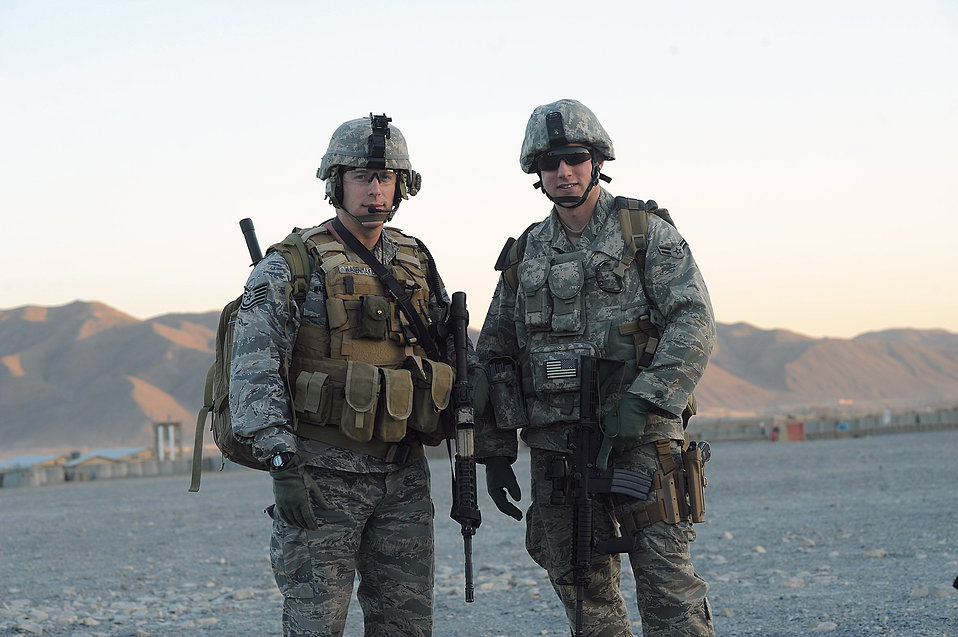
TACPs provide vital link between pilots, ground troops

As tactical air control party Airmen, Tech. Sgt. Harvey Wagenmaker and Airman 1st Class Eric Czachor serve as liaisons between Army ground commanders and pilots to coordinate close-air support to eliminate enemy threats.